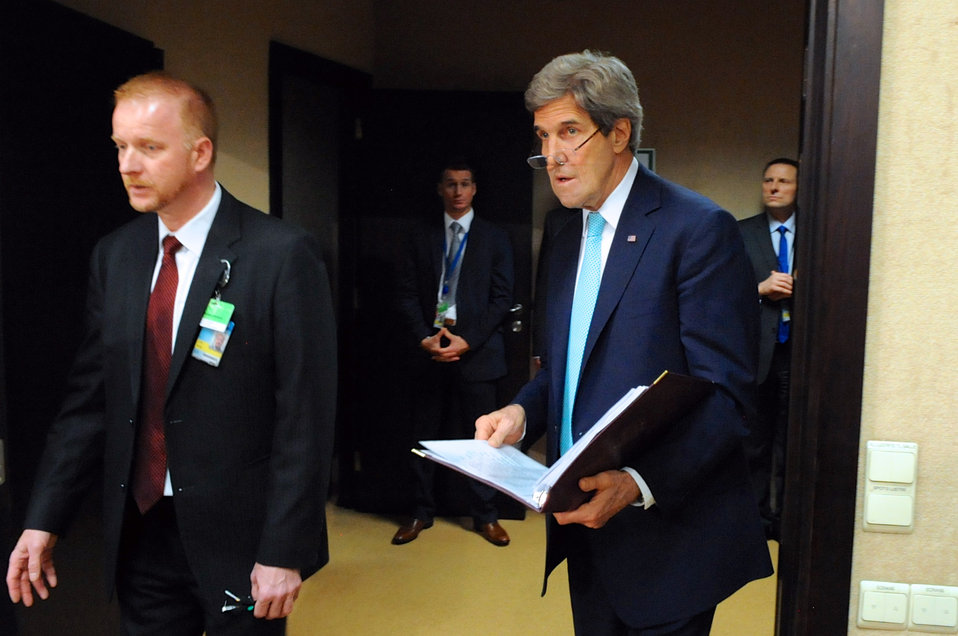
Secretary Kerry Attends NATO-Ukraine Session at NATO Headquarters in Brussels

U.S. Secretary of State John Kerry enters a NATO-Ukraine Commission Session at NATO Headquarters in Brussels, Belgium, on April 1, 2014.